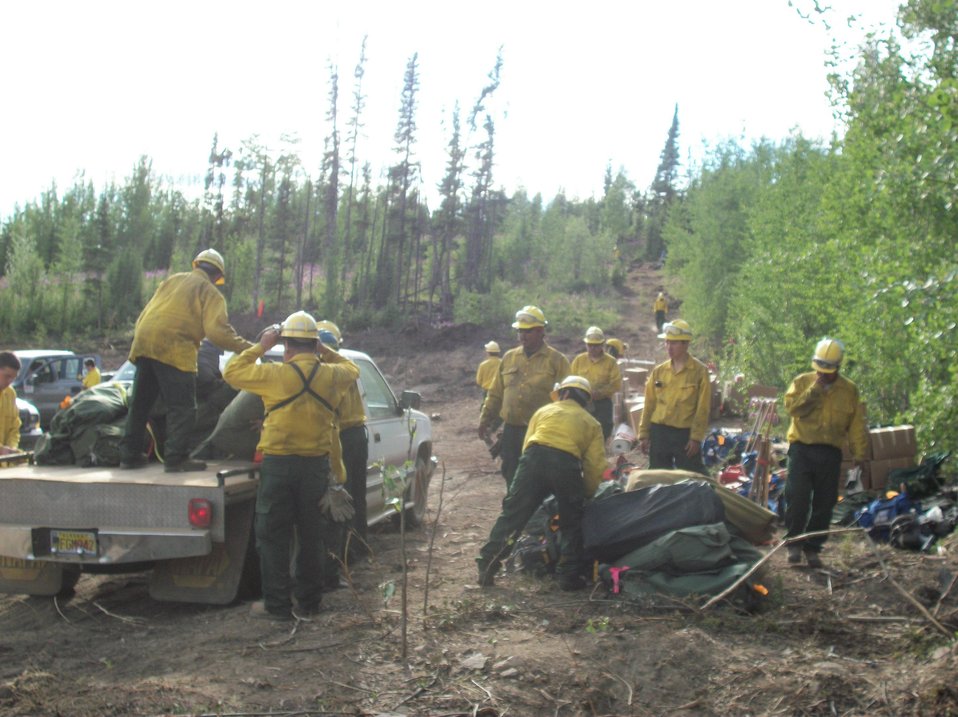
Fire crew arrives with gear at the Tetlin Ridge Fire part of the Moon Lake Complex Fires in Tok, AK. The Moon Lake Complex Fires consists of 2 fires, Moon Lake Fire and Tetlin Junction Ridge Fire, along the Alaska and Taylor Highways near Tok, AK. Lightning strikes on Jun. 25, 2013 caused the fires, which have consumed over 49, 959 acres.